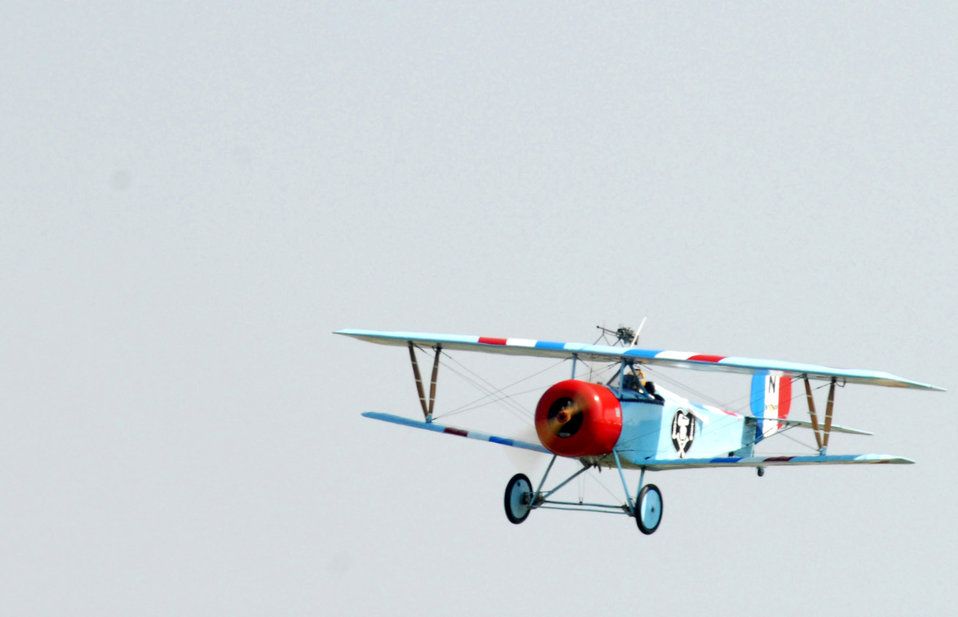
World War 1 Fly In

A pilot approaches the target during a